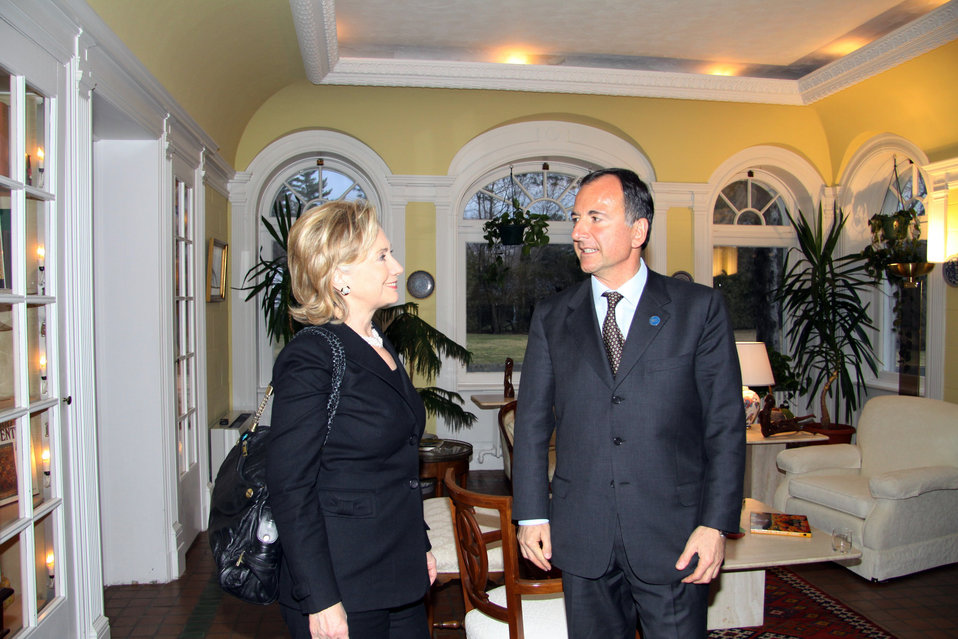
Secretary Clinton Meets With Italian Foreign Minister

U.S. Secretary of State Hillary Rodham Clinton with Italian Foreign Minister Franco Frattini during the G8 Foreign Ministers Meeting in Ottawa, Canada March 29, 2010.